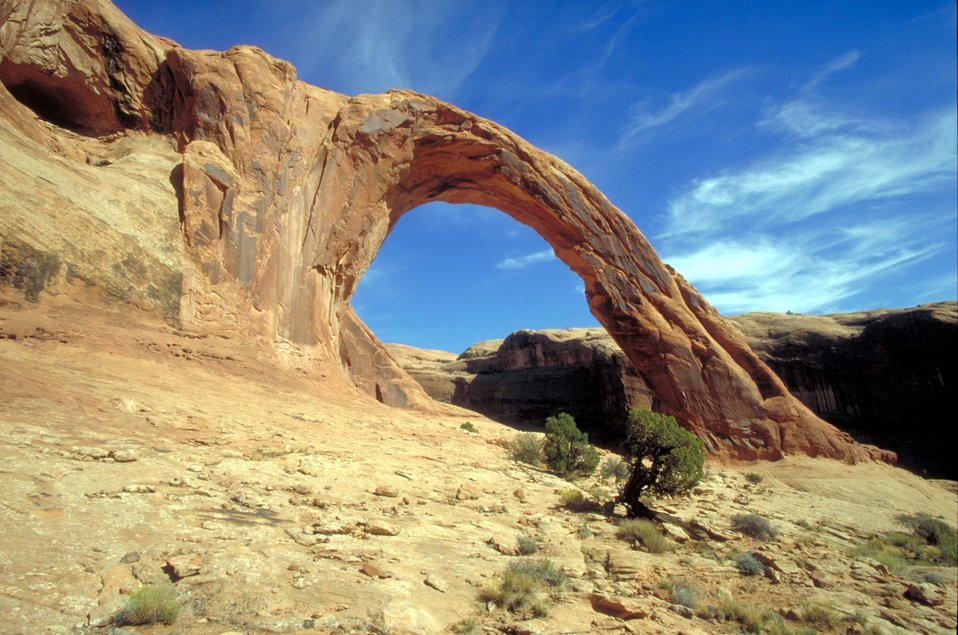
Corona Arch near Moab, Utah.